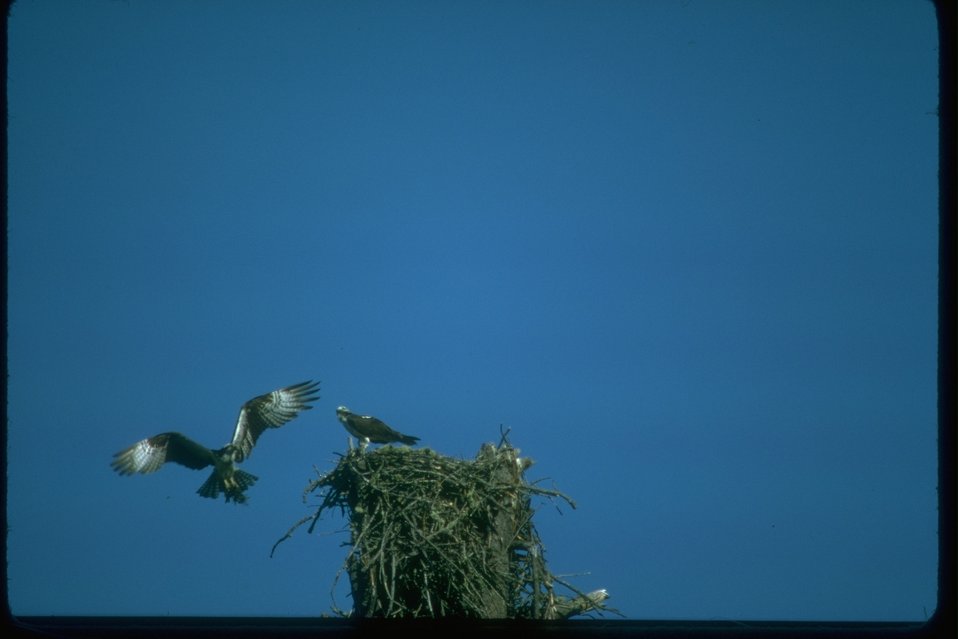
Osprey landing on perch.